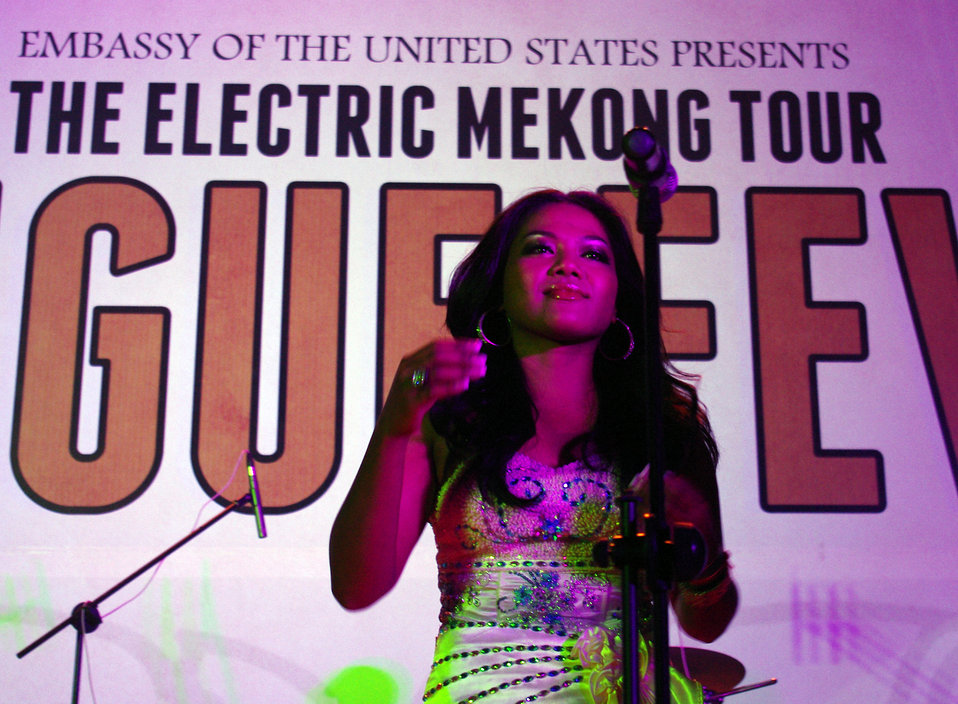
PEPFAR, U.S. Embassy Host Dengue Fever Concert in Hanoi